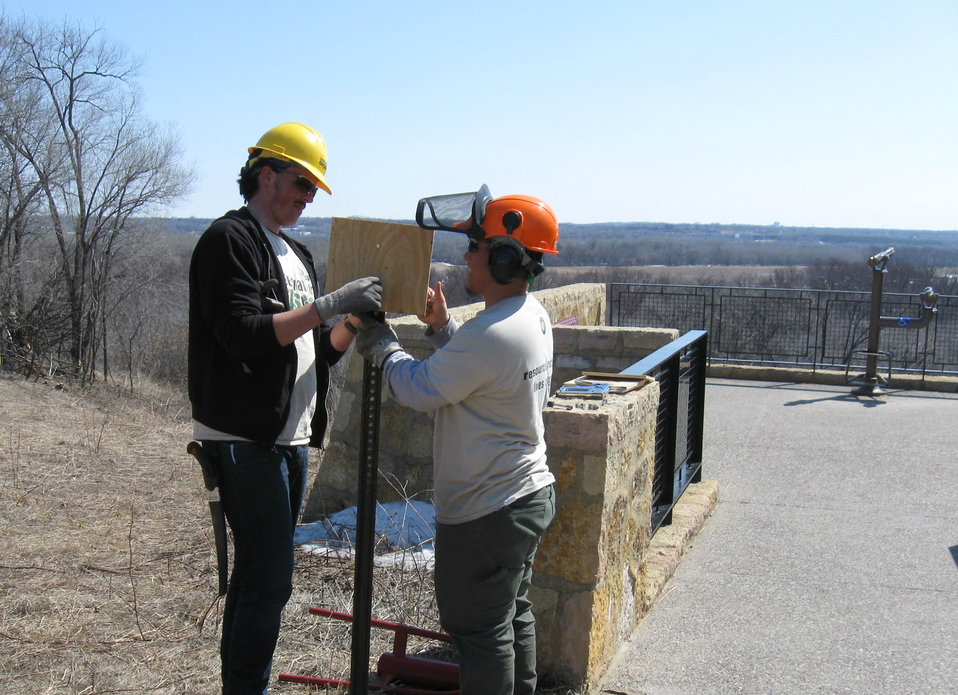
Getting the Word Out

Crew members posted signs explaining the restoration work to the public.